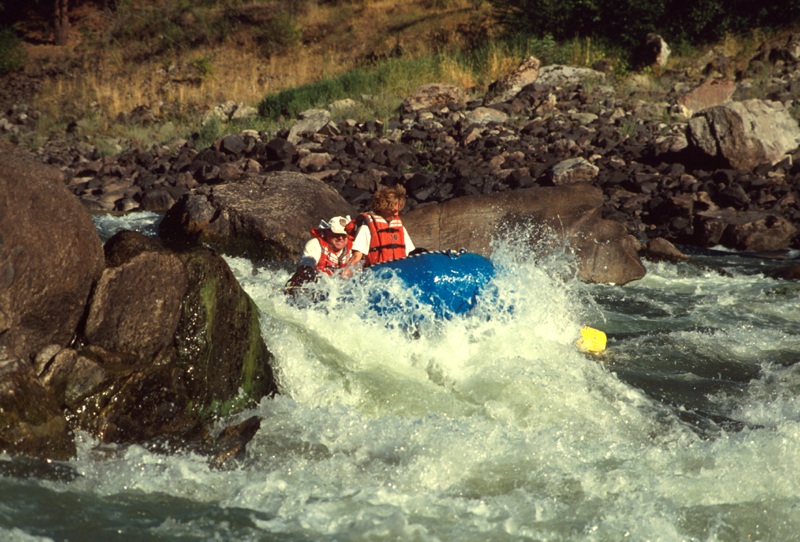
Rafting Cottonwood Field Office UCSC Upper Columbia Salmon Clearwater District